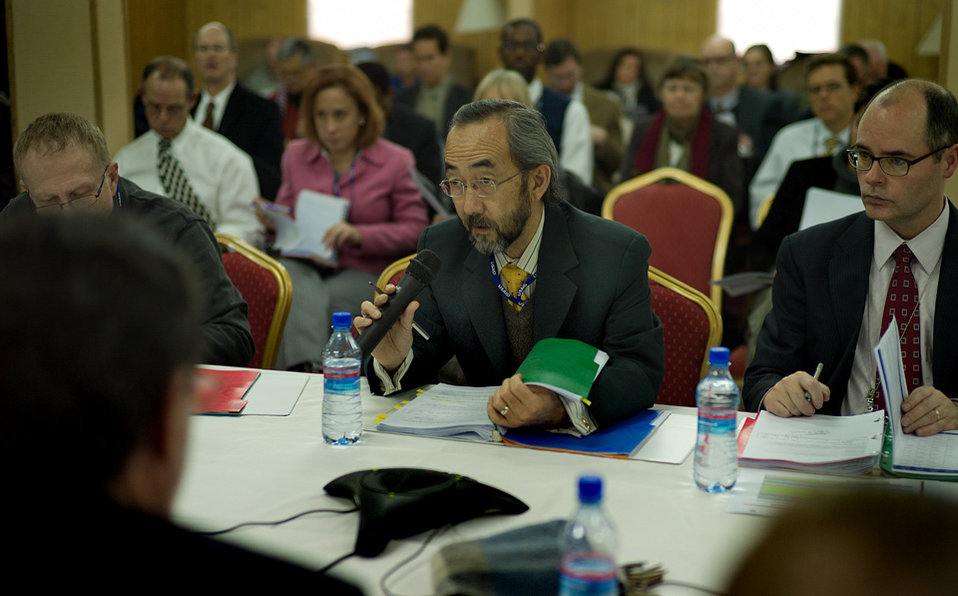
Ken, Greg Burton